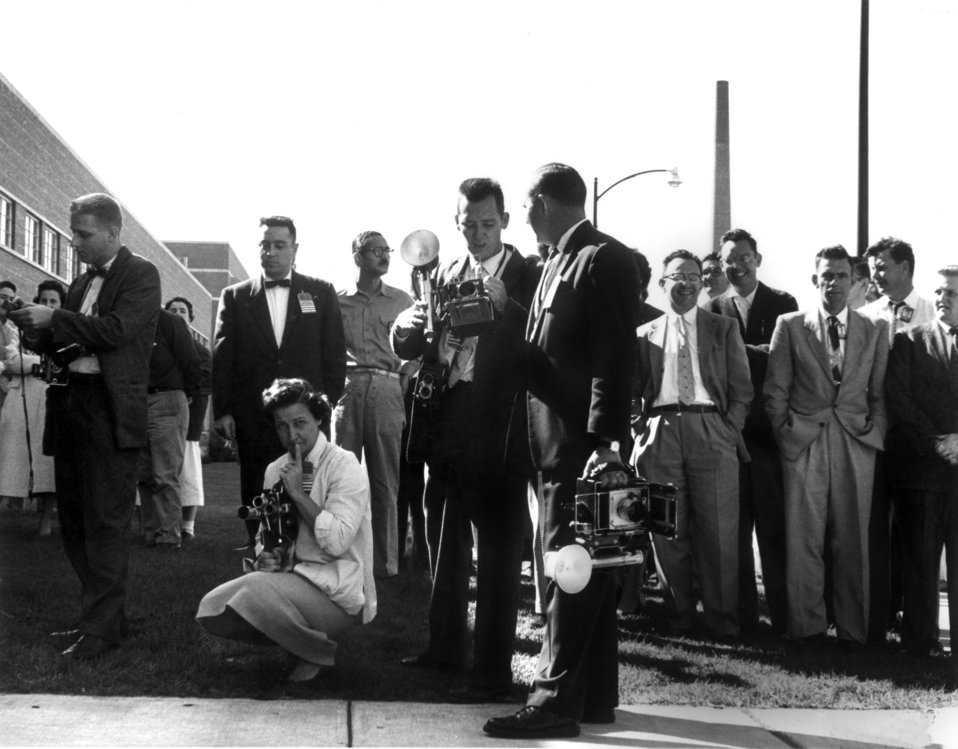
Press at ORNL for Queen Frederika Visit

58-1005 DOE photo Ed Westcott 11-7-1958 Oak Ridge Tennessee